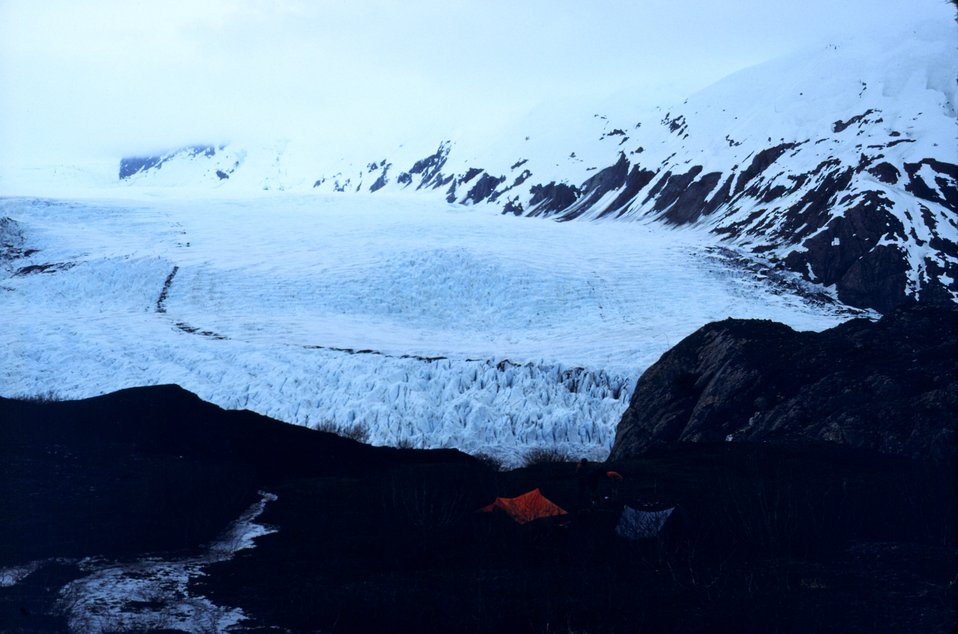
Portage Glacier area. Note tent for camping.